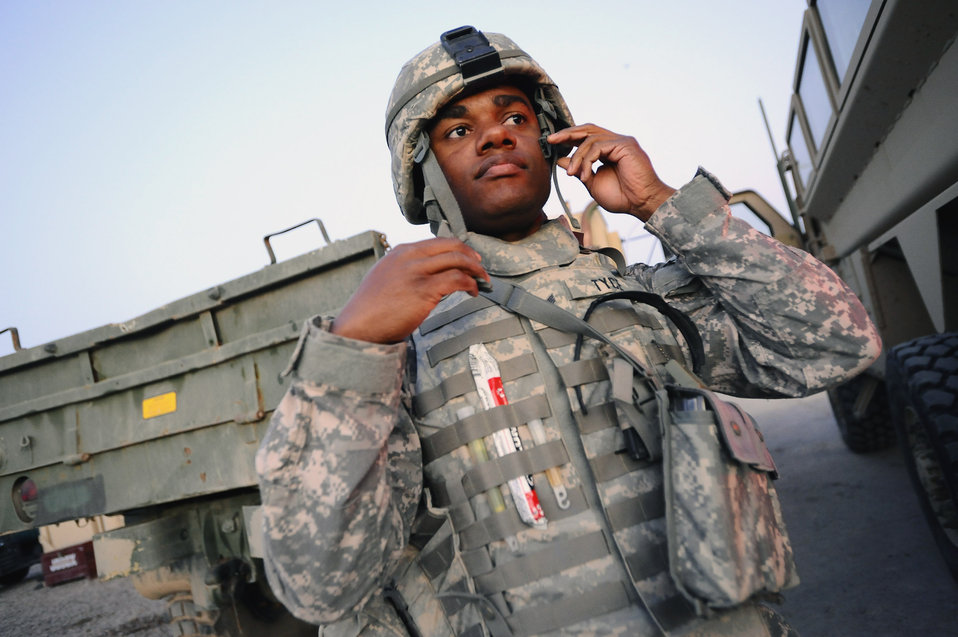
Air Force engineers answer the call from Soldiers in Iraq

Staff Sgt. Kevin Tyce dons his individual body armor before leaving the base on an outside-the-wire mission Dec. 11 at Joint Base Balad, Iraq. Sergeant Tyce and other Airmen from the 732nd Expeditionary Civil Engineer Squadron Det. 6 undertake construction projects for the Army. Sergeant Tyce, a 732nd ECES Det. 6 electrical systems specialist and native of Oklahoma City, is deployed from Yokota Air Base, Japan.